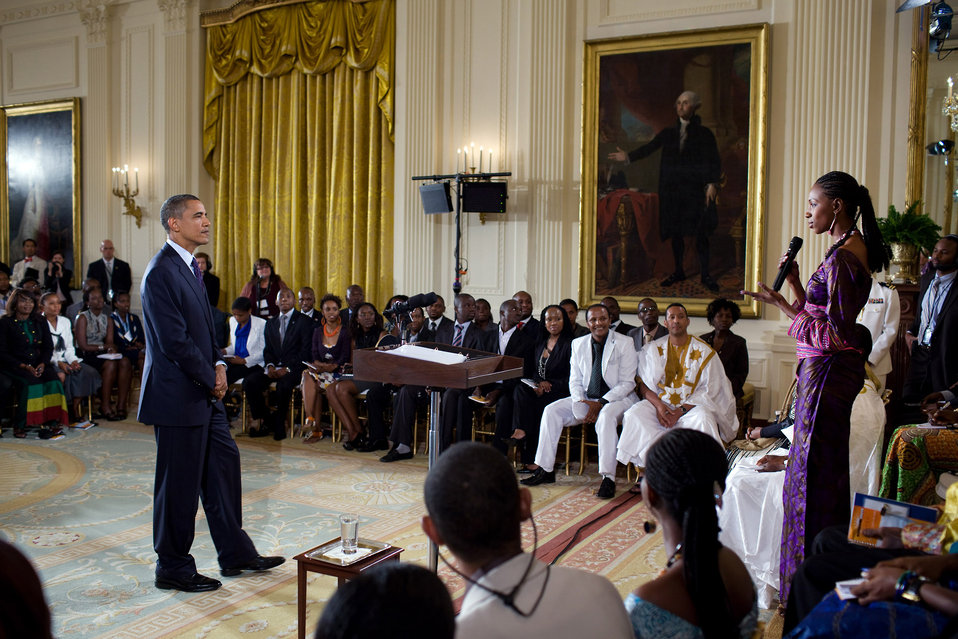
President Obama Listens to a Question from Fatoumata Amadou Sangho from Maliduring

President Barack Obama listens to a question from Fatoumata Amadou Sangho from Maliduring a town hall-style meeting with young African leaders in the East Room of the White House in Washington, D.C., on August 3, 2010.